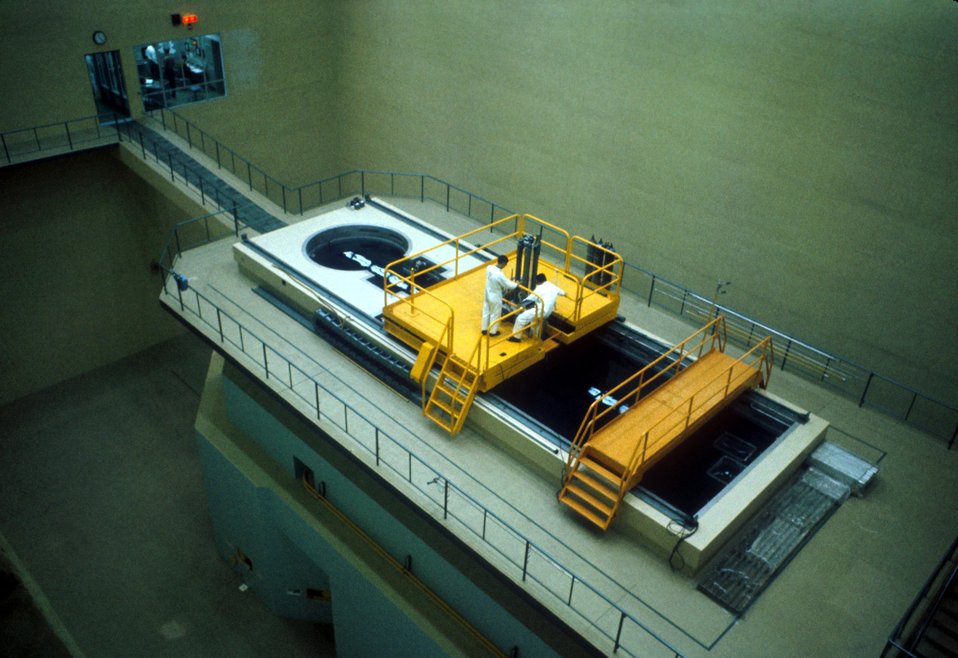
Top view of Chinese 1000kw Swimming Pool Reactor. Atoms for Peace Reactor -- GE. c. 1961